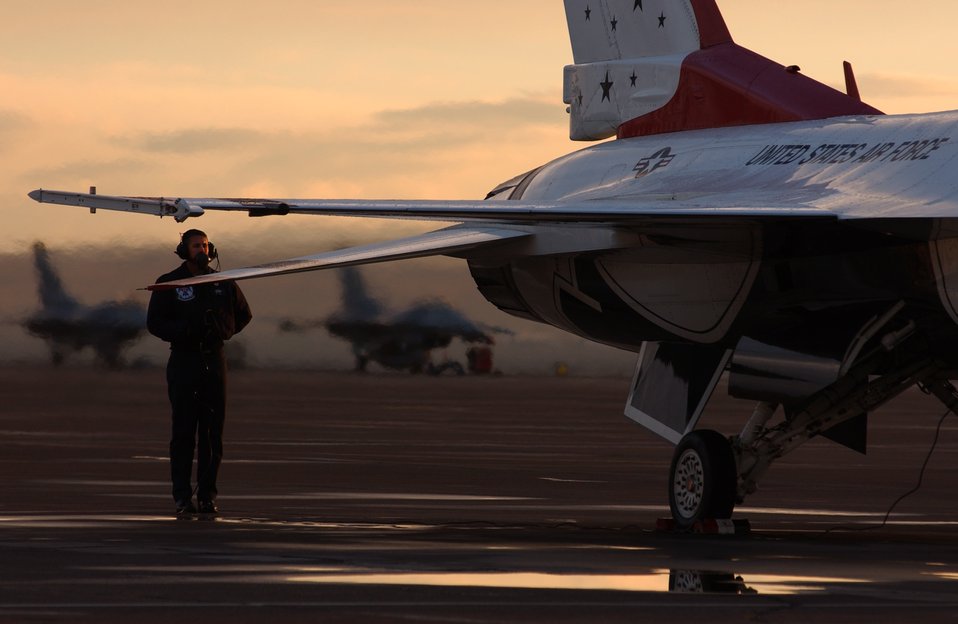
Thunderbirds prepare to launch into season

NELLIS AIR FORCE BASE, Nev. -- Staff Sgt. Justin Gile uses his headset to speak with a Thunderbird pilot before an early morning flight here recently. The Thunderbirds are still training for their performance season, which begins in March. Sergeant Gile is a crew chief with the U.S. Air Force Aerial Demonstration Squadron.